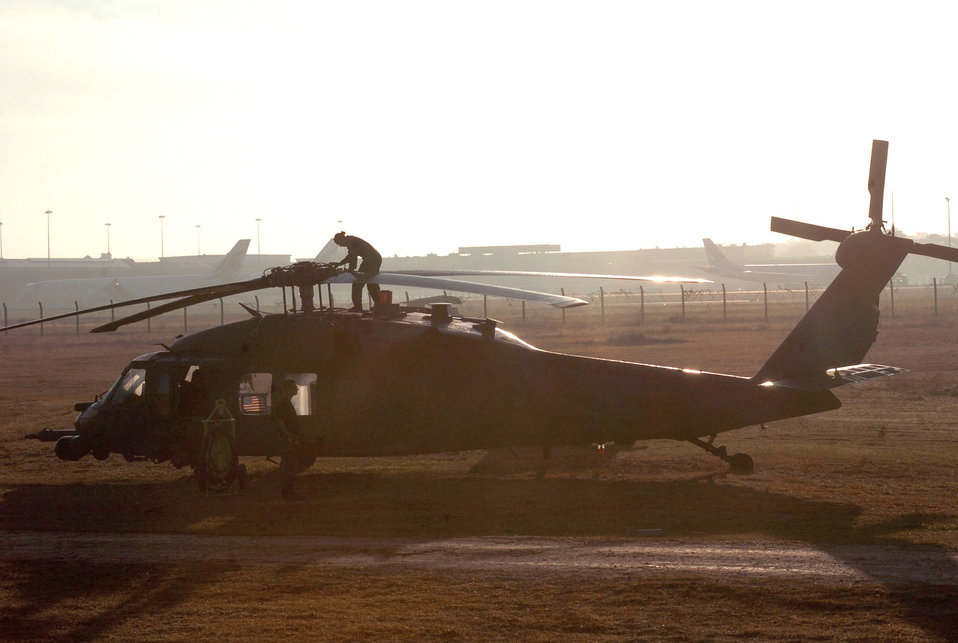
Relief effort making progress

DAMBULA, Sri Lanka -- Airman 1st Class Emily Starcher conducts a pre-flight check of an HH-60G Pave Hawk helicopter before an Operation Unified Assistance mission. The Kadena Airmen are helping bring food, medicines and supplies to people affected by the Dec. 26 tsunamis. Airman Starcher is a flight engineer from the 33rd Rescue Squadron at Kadena Air Base, Japan,